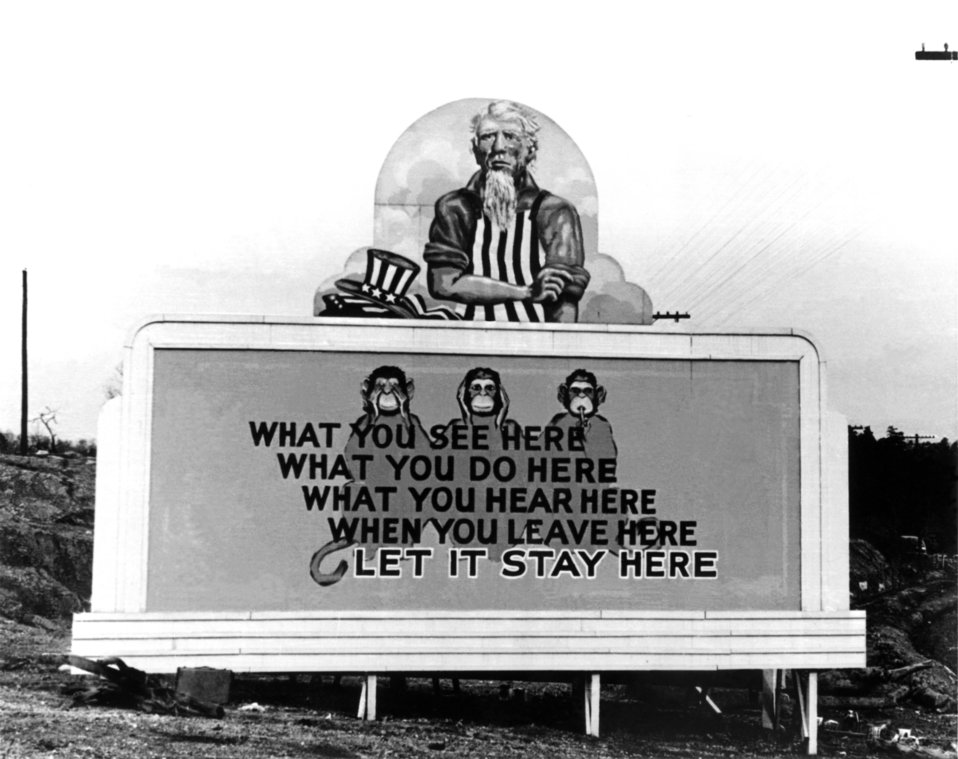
Billboard posted in Oak Ridge

Roll 157-4 DOE photo Ed Westcott

Billboard posted in Oak Ridge Tennessee 12/31/1943